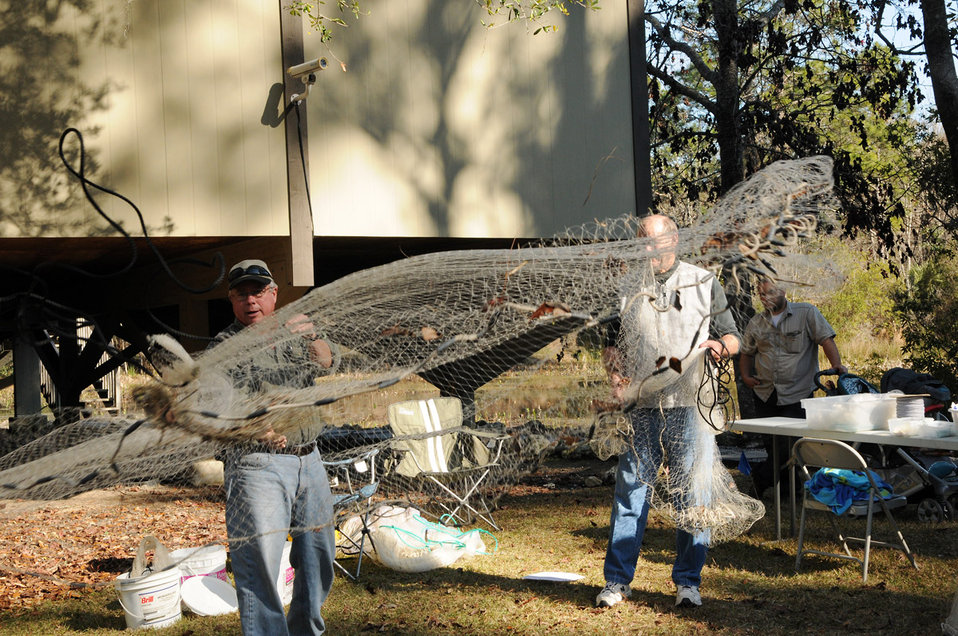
Learning to use a cast net

St. Marks NWR 2014 WHO Festival. February 1, 2014.
A variety of exhibitors provided opportunities for festival goers to learn about ways to enjoy outdoor recreation.